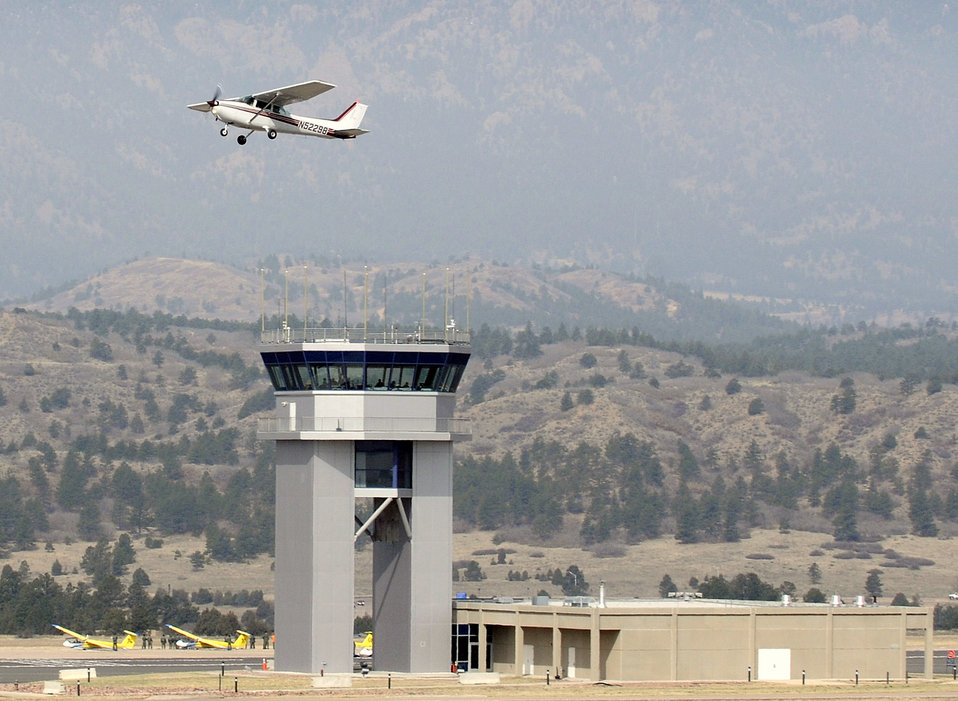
Clouds lift for 'Cadet for a Day'

Cadet for a Day Joe Hayford soars past the air control tower on the U.S. Air Force Academy grounds. Cadet Hayford's ride was sponsored by cadet squadron 4, and organized by the Make-A-Wish foundation.